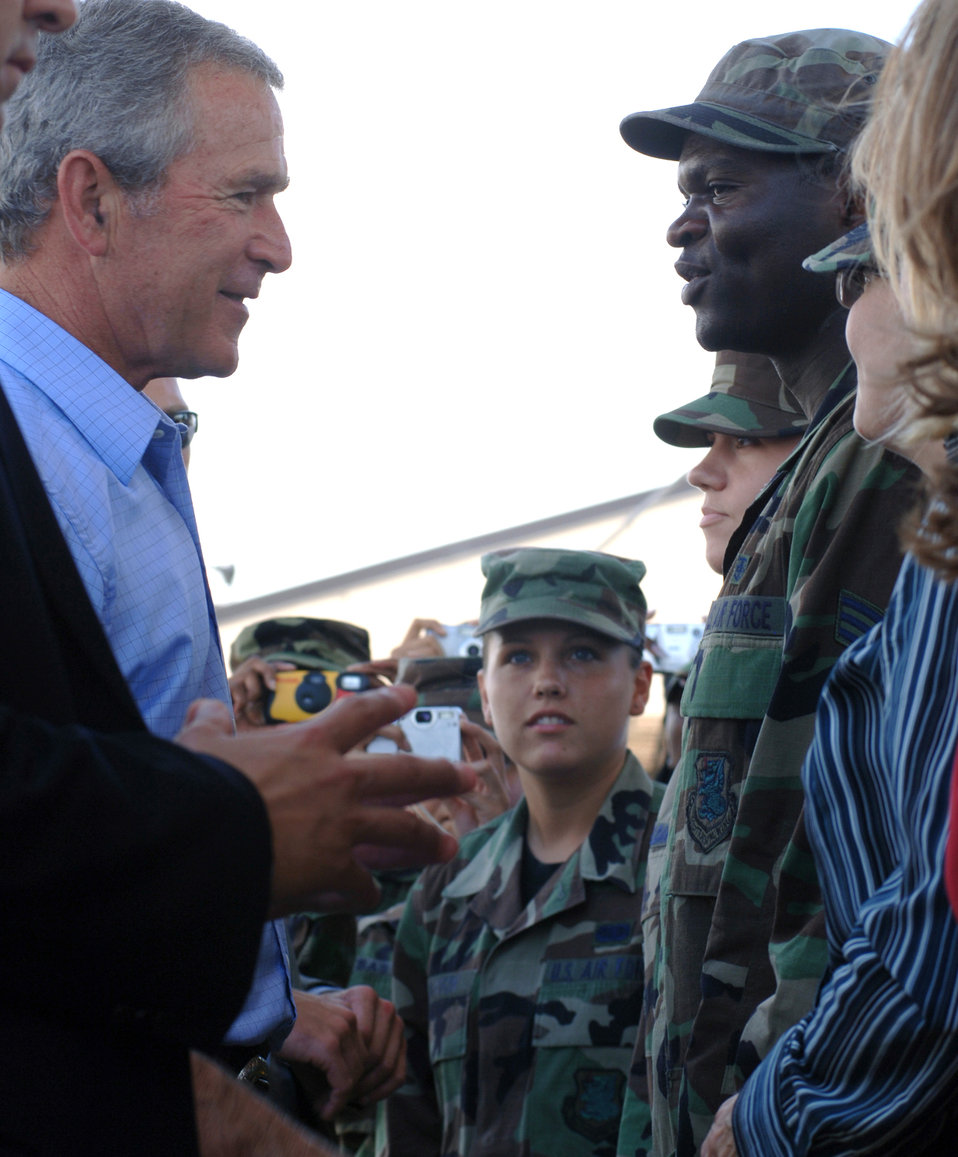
President Bush visits Keesler

Senior Airman Ngwa Ntumngia talks with President George W. Bush during a stop at Keesler Air Force Base, Miss., today. The president met Airmen and civilians from Keesler AFB during his visit to the Gulfport region in Mississippi to view the area devastated by Hurricane Katrina one year ago. Airman Ntumngia is an administration specialist with the 81st Medical Operations Squadron and originally from Cameroon.